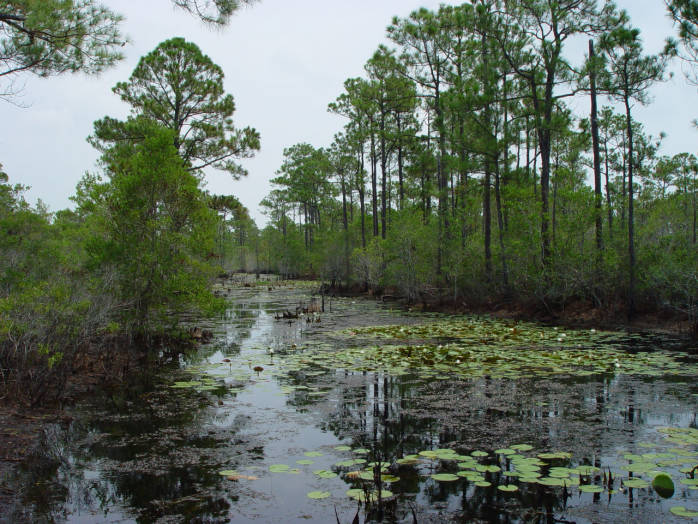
Alabama Wetlands, USFWS